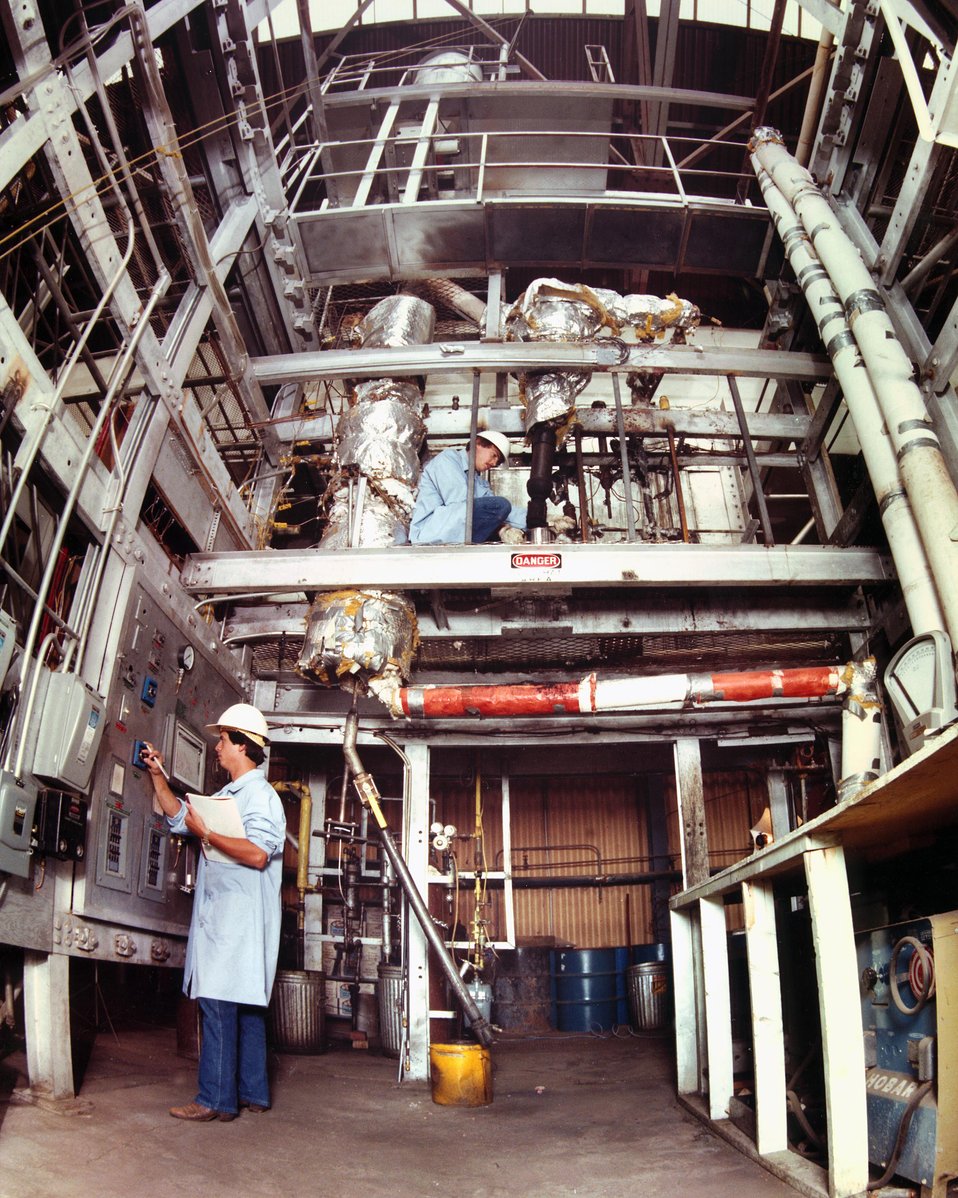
THE SGFM CONTROL PANEL (LOWER LEFT) AND THE FEED HOPPER, REACTOR, AND CHAR REMOVAL HOPPER (TOP TO BOTTOM CENTER).

THIS PROJECT ENTAILS CONDUCTING STUDIES IN AN EXISTING ONE- HALF-TON PER-DAY TEST REACTOR, UTILIZING ANIMAL MANURES AND OTHER BIOMASS MATERIALS AS FEED STOCKS, TO DETERMINE THE INFLUENCE OF TEMPERATURE, RESIDENCE TIME, PRESSURE, AND FEED STOCK MATERIALS ON THE YIELD AND QUALITY OF THE PROCESS.THE CYCLONE USED TO REMOVE PARTICULATES FROM THE PRODUCT GAS IS AT UPPER RIGHT.